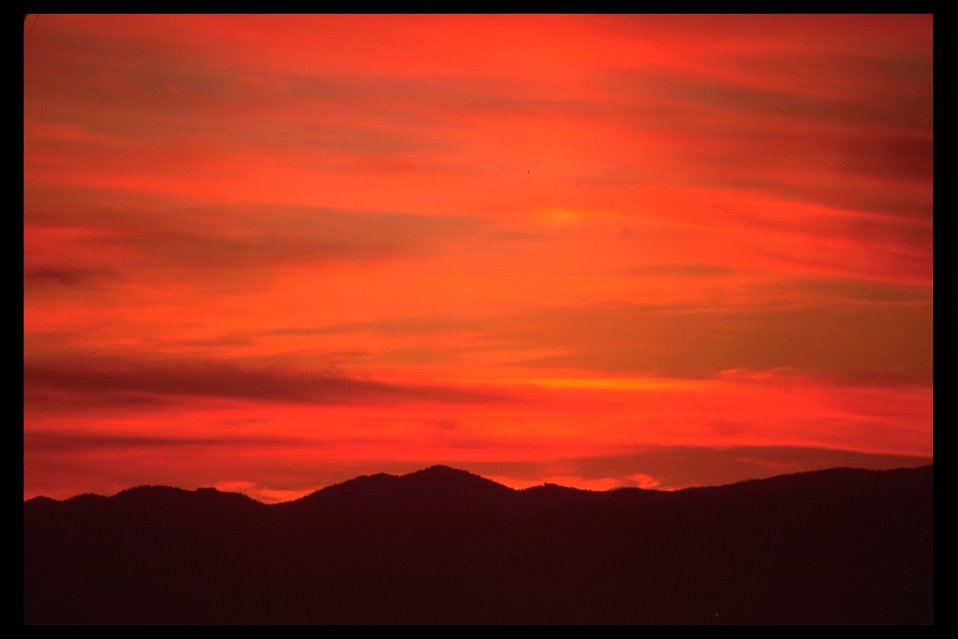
Sunset from Roxy Anne Peak.